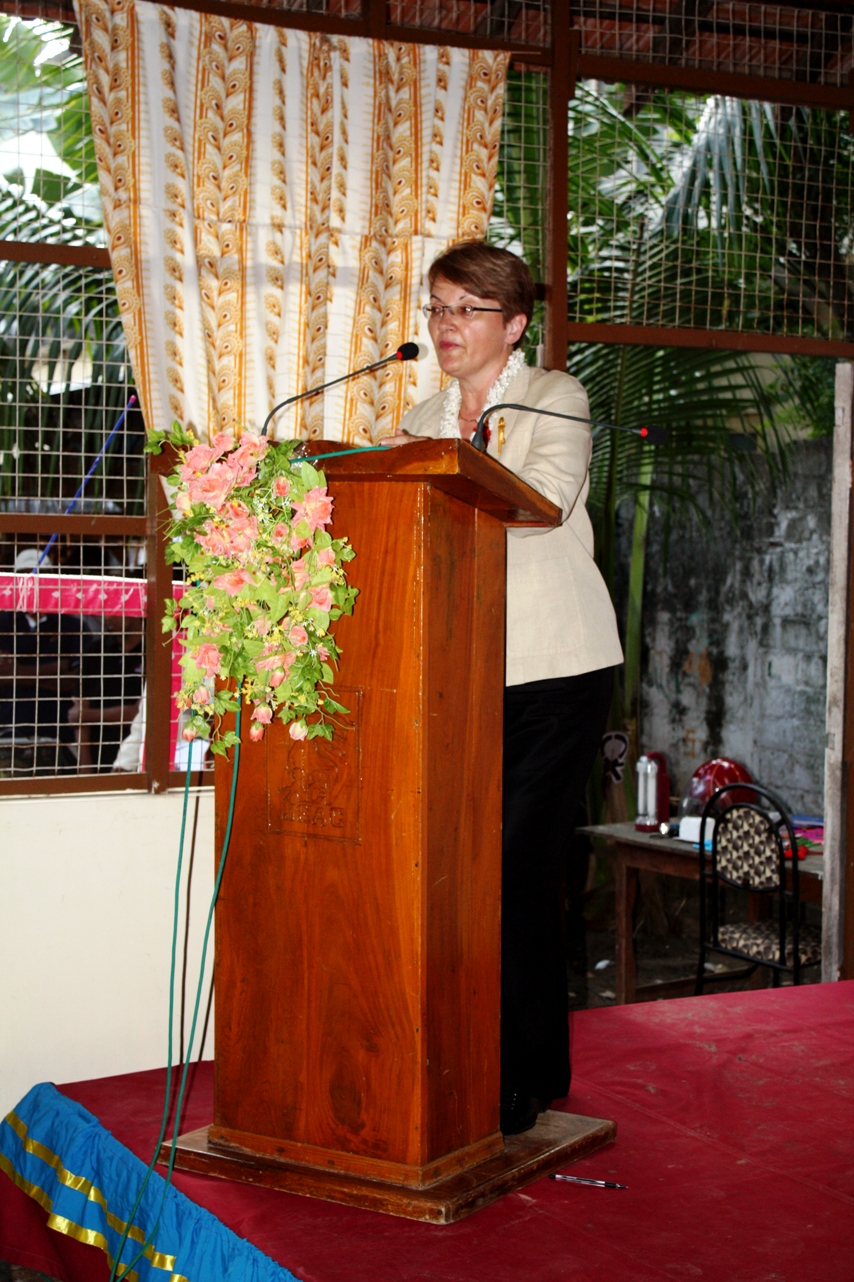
Ambassador Butenis Delivers Remarks

U.S. Ambassador to Sri Lanka and Maldives Patricia A. Butenis delivers remarks at the opening of the American Corner Jaffna in Colombo, Sri Lanka, on January 24, 2011.